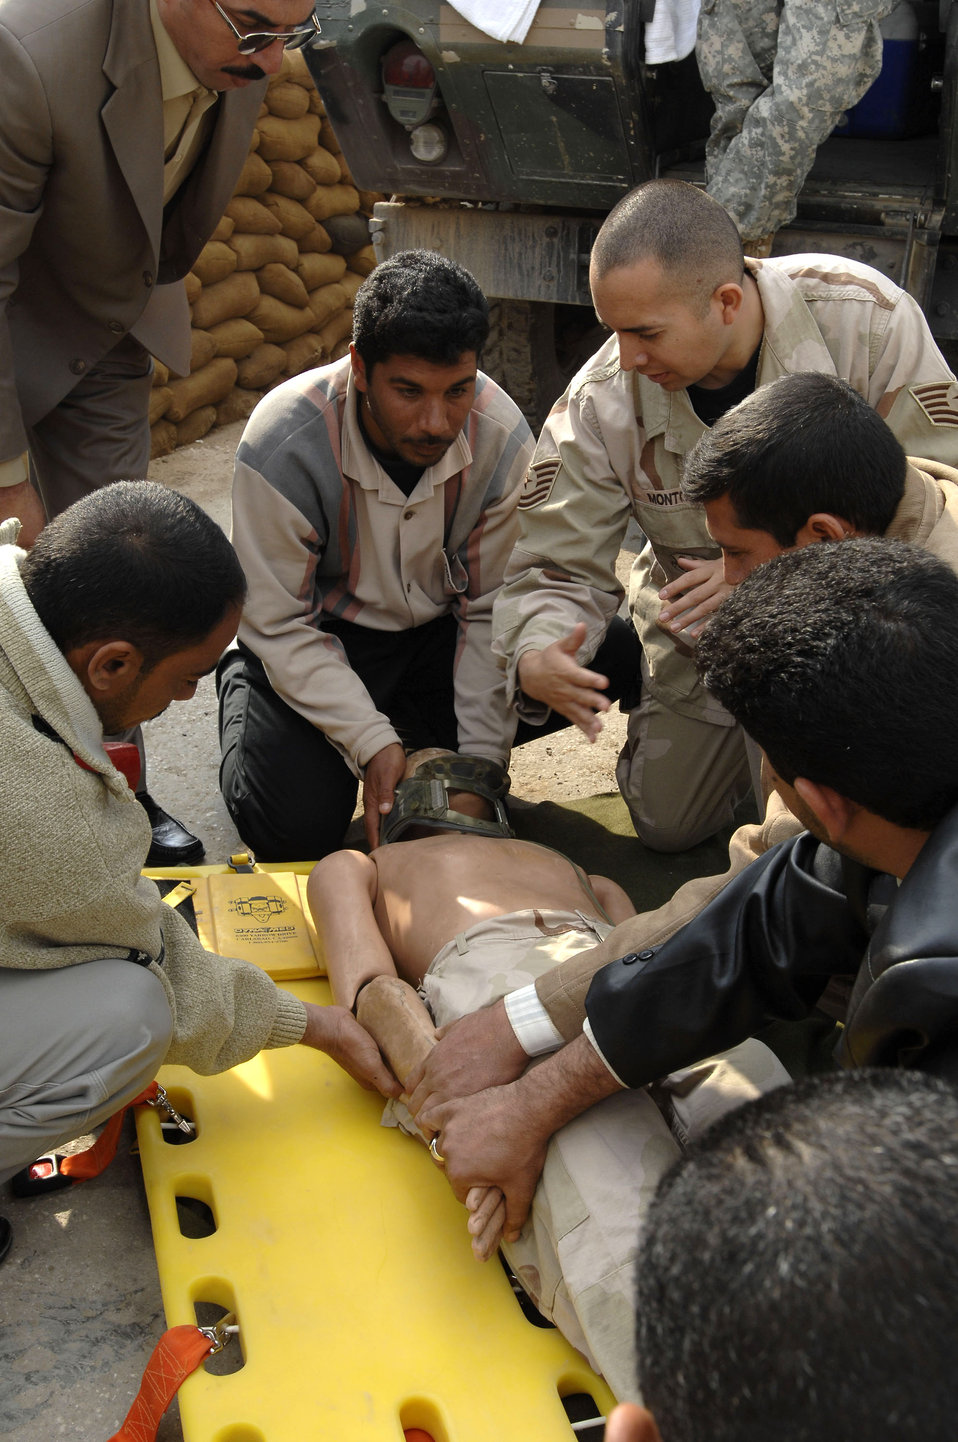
Sharing knowledge

Tech. Sgt. Adam Montoya explains to Iraqi firefighters Dec. 31 how to safely move a head trauma patient. Air Force firefighters from Ali Base, Iraq, are training Iraqi firefighters to enhance their rescue capabilities for their local communities.